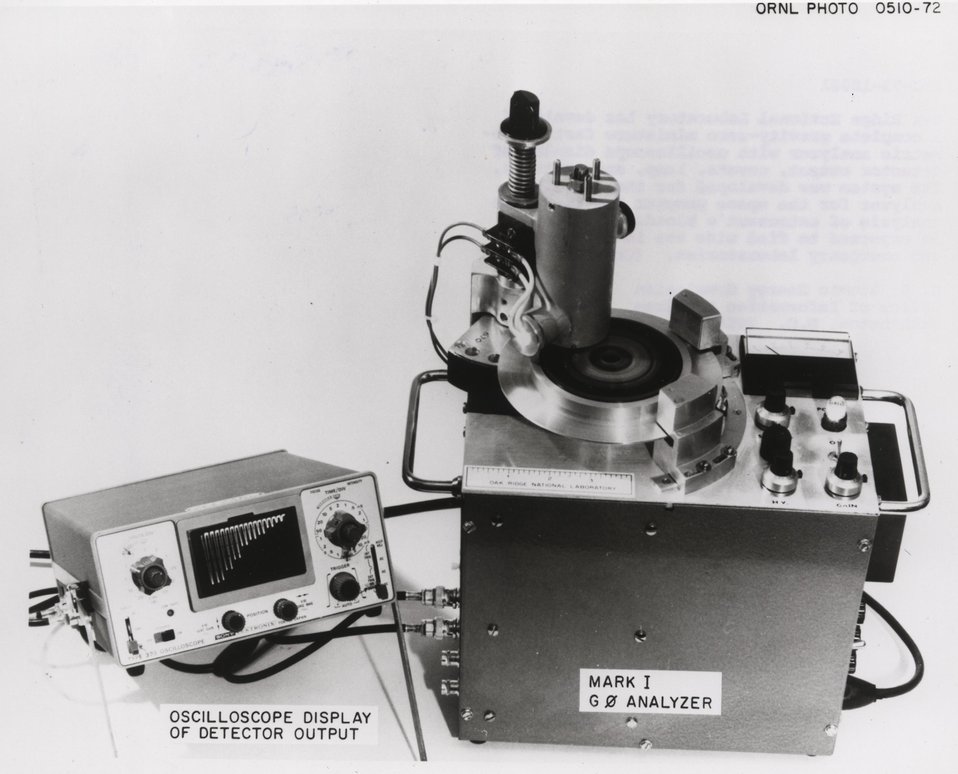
Oak Ridge National Laboratory has developed a complete gravity-zero miniature fast photo-metric analyzer with oscilloscope display of detector output, duvets, lamp, and controls. c. 1973